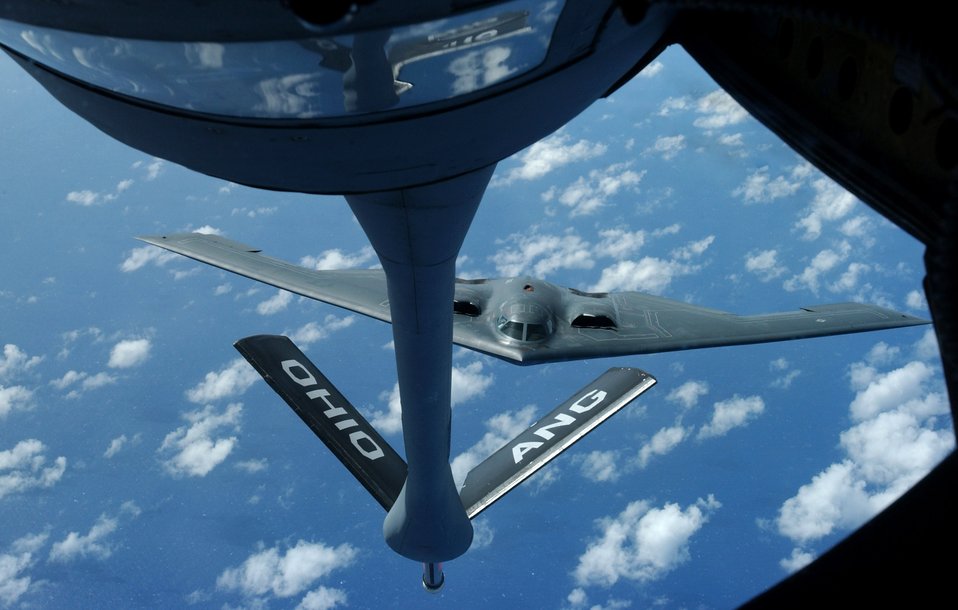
Keeping Spirits up

A KC-135 Stratotanker prepares for a mid-flight refueling with a B-2 Spirit Nov. 20 over the Pacific Ocean. The B-2 and KC-135 are deployed to Andersen Air Force Base, Guam, to support U.S. Pacific Command's continuous bomber presence and theater security package operations. The KC-135 is assigned to the from the 121st Refueling Squadron from Rickenbacker International Airport at Columbus, Ohio. The B-2 is assigned to the 509th Bomb Wing from Whiteman AFB, Mo.